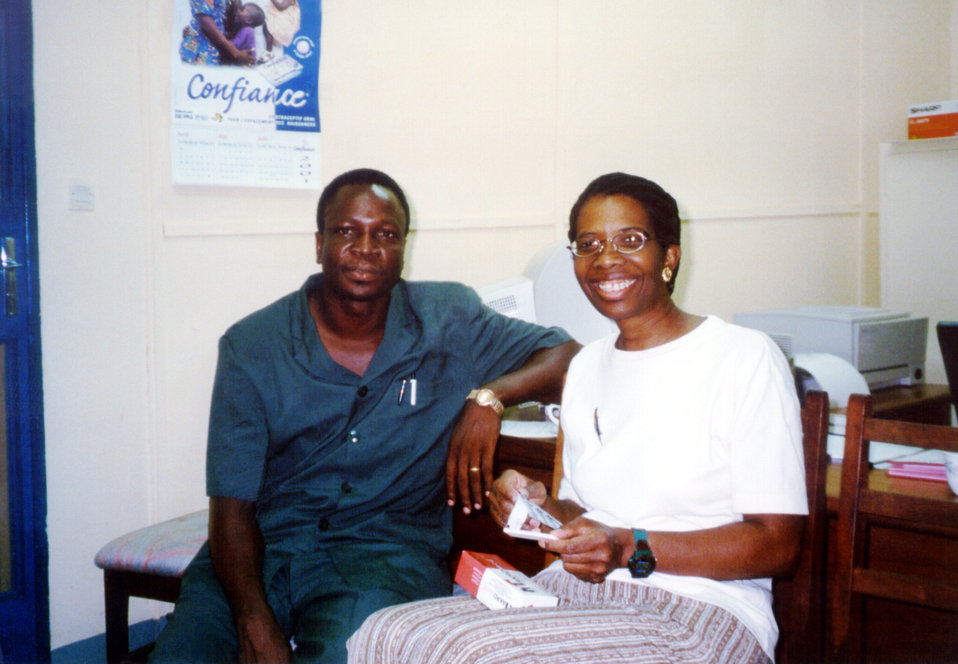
This was a photograph of Gail Stennies, M.D. (Rt) taken in Koupela, Burkina Faso in western Africa.